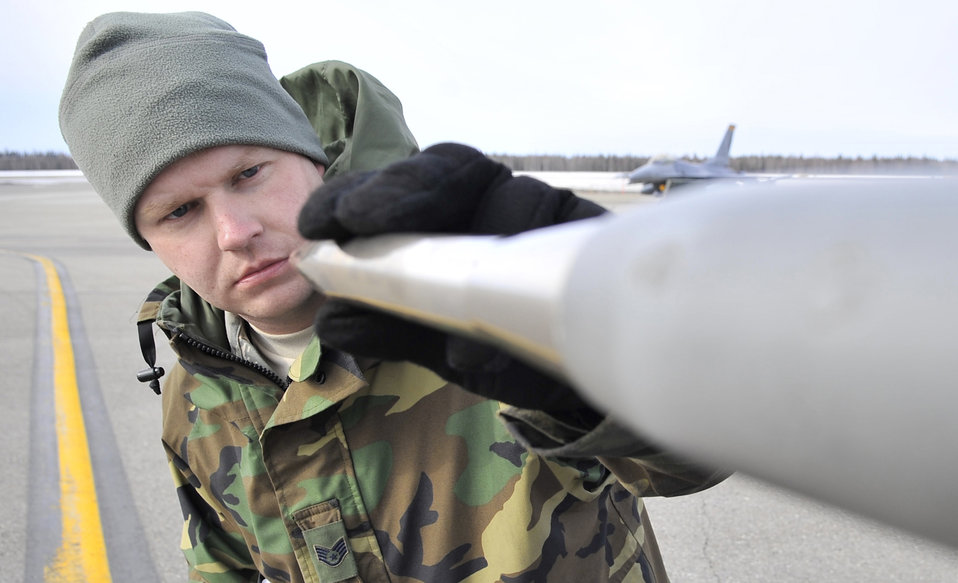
Making it happen: RF-A Maintainers

Staff Sgt. James George inspects a pitot tube on an F-16 Fighting Falcon for dents and debris April 17 during Red Flag-Alaska at Eielson Air Force Base, Alaska. Red Flag-Alaska is a Pacific Air Forces-directed field training exercise for U.S. and coalition forces who fly under simulated air-combat conditions. Sergeant George is a crew chief assigned to the Iowa Air National Guard's 132nd Fighter Wing from Des Moines.